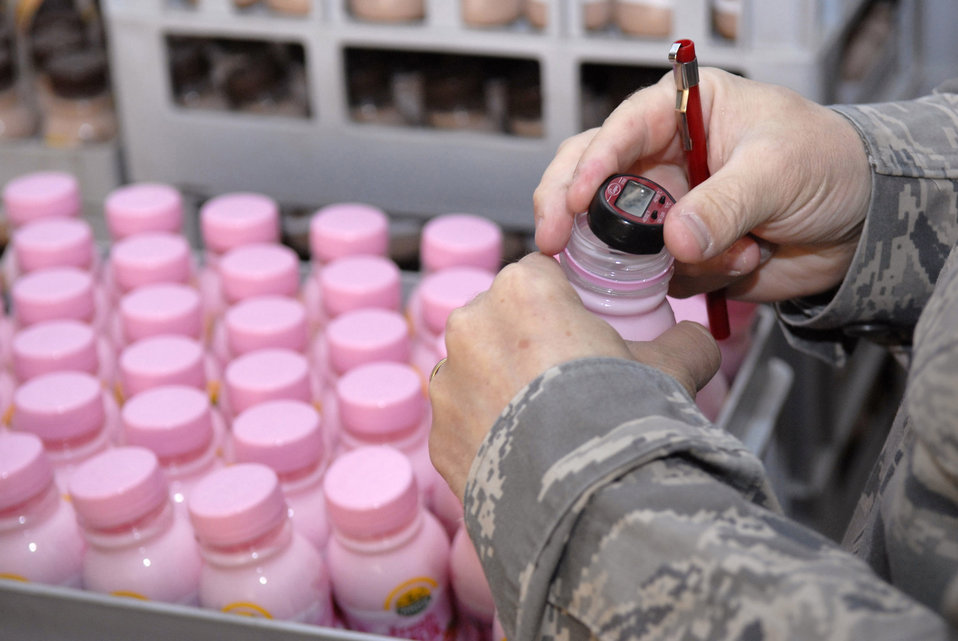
Public health maintains high standards, healthy force

Tech. Sgt. Duwayne Foster takes the temperature of a bottle of milk to ensure it is properly refrigerated during the monthly dining facility inspection April 18 at an air base in Southwest Asia. The public health office inspects the dining facilities, checks personnel medical records, and provides medical intelligence for forward deployers. Sergeant Foster is the 379th Expeditionary Medical Group NCO in charge of public health and hails from Mobile, Ala. He is deployed from Keesler Air Force Base, Miss.